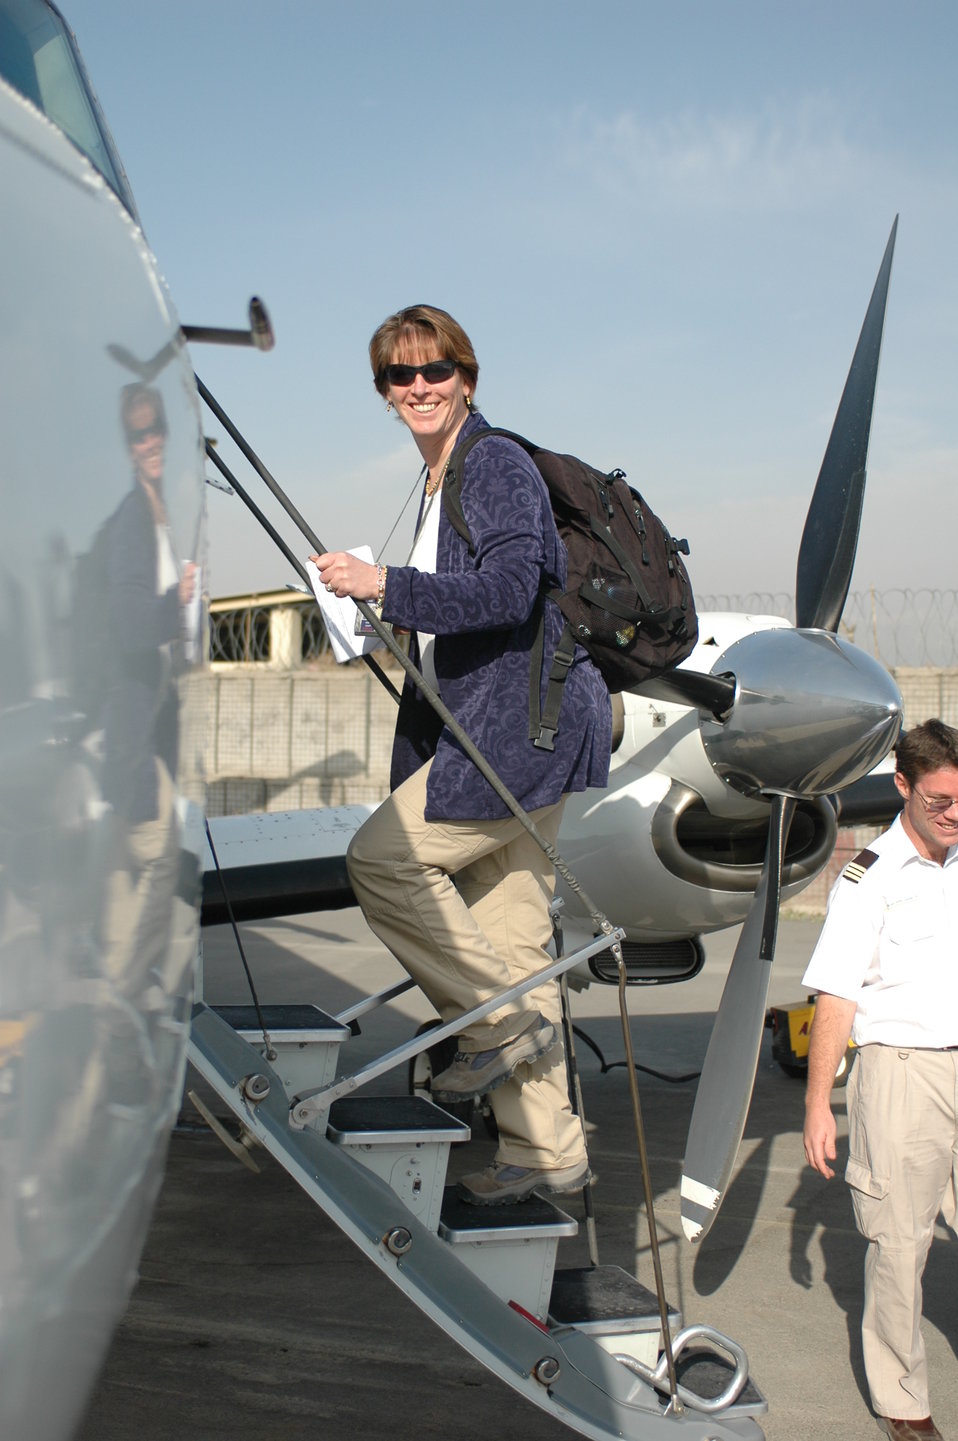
Dr Shah Visits Kandahar April 9, 2010